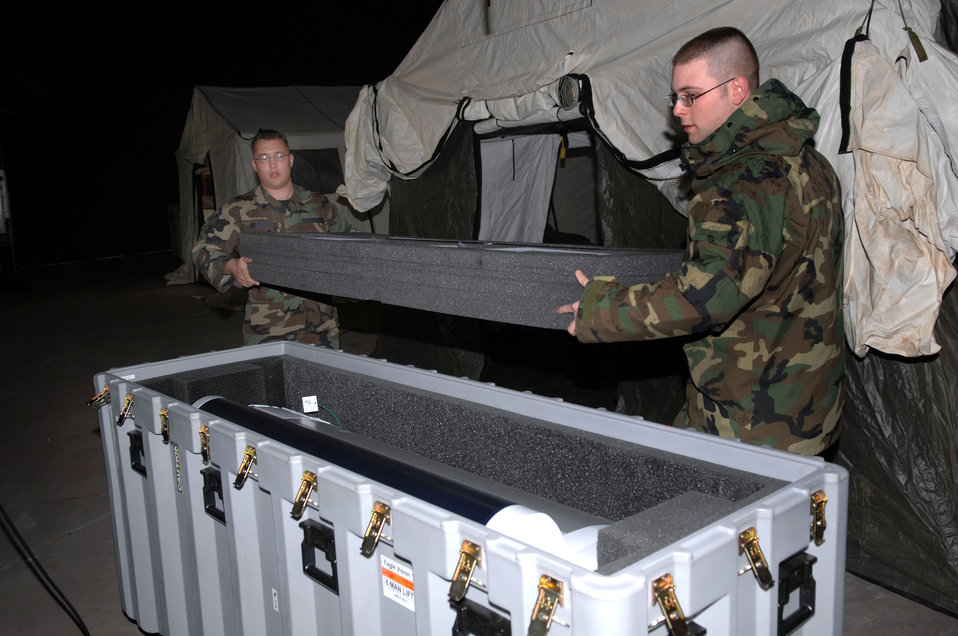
Ramstein team gives planners Eagle Vision

Senior Airmen Ryan Nicoletti and Adam Walters pack a large format printer for storage Feb. 29 at Ramstein Air Base, Germany. When deployed, the Eagle Vision-1 team creates hard copy prints of commercial satellite imagery. Both Airmen are commercial satellite imagery geospatial analysts.